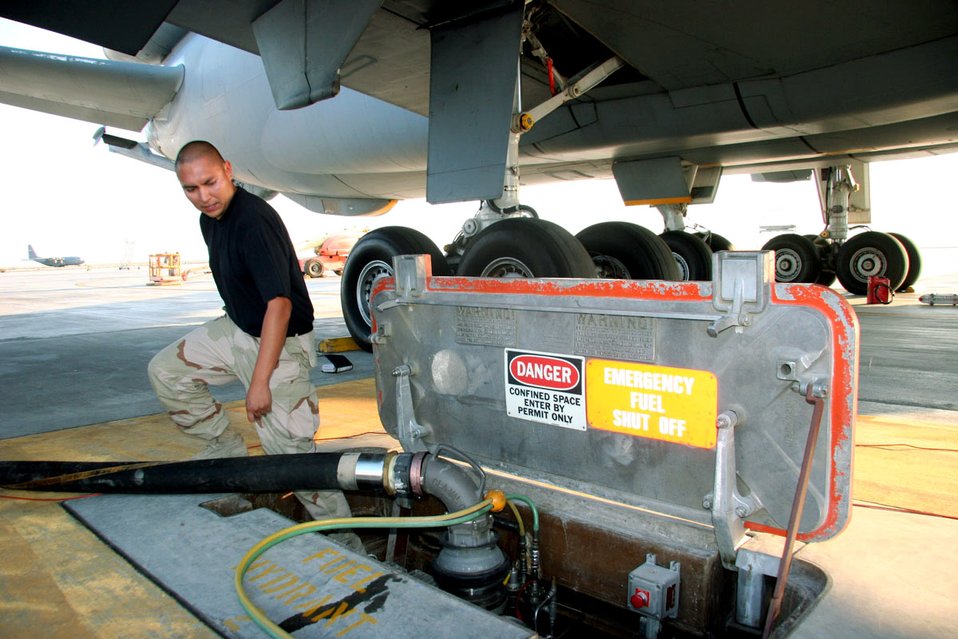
White Hawk soars, becomes AF Warrior

Senior Airman Shiloh White Hawk, 380th Expeditionary Logistics Readiness Squadron, fuels distribution technician drives a R12 HSV hydrant servicing vehicle to the 380th Air Expeditionary Wing ramp to refuel a KC-10 aircraft using they underground hydrant fuel system.